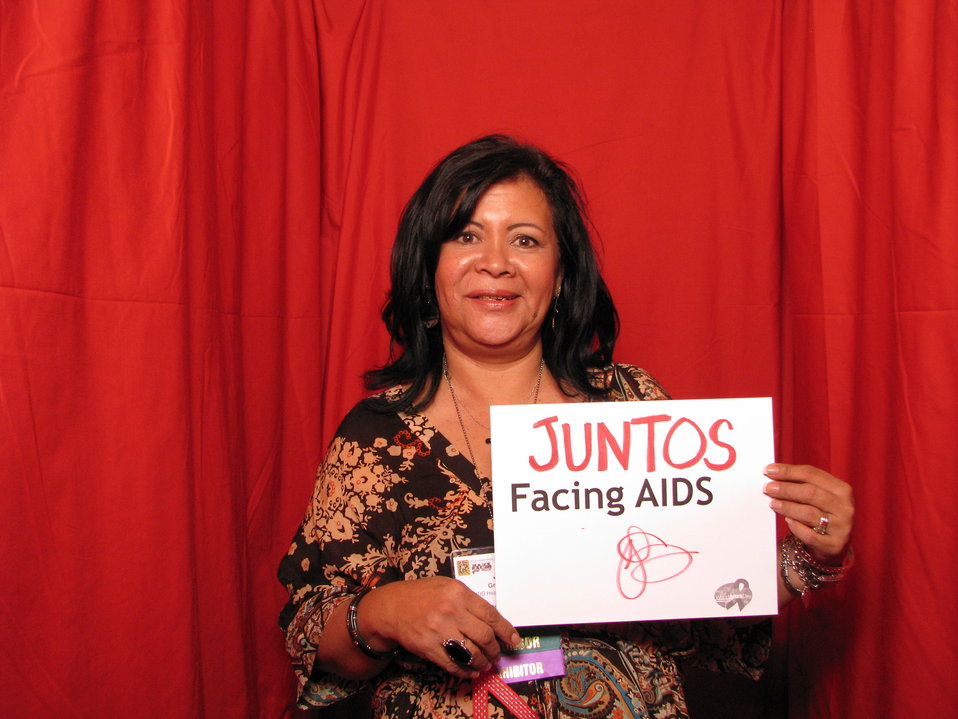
Juntos FACING AIDS (Together, FACING AIDS).

From the AIDS.gov photo booth at the U.S. Conference on AIDS, September 2010 (Orlando, FL).